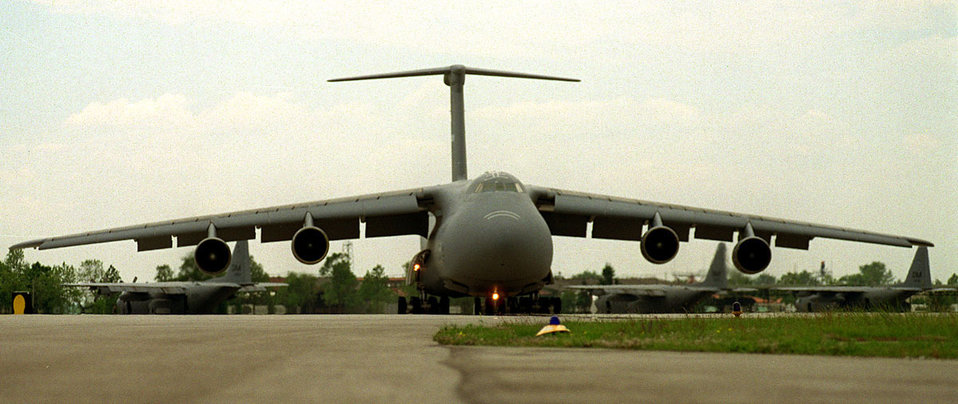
C-5 launch

FILE PHOTO -- A C-5 Galaxy transport prepares to launch from Aviano Air Base, Italy. The C-5 is one of the many aircraft at Aviano supporting NATO's Operation Allied Force.